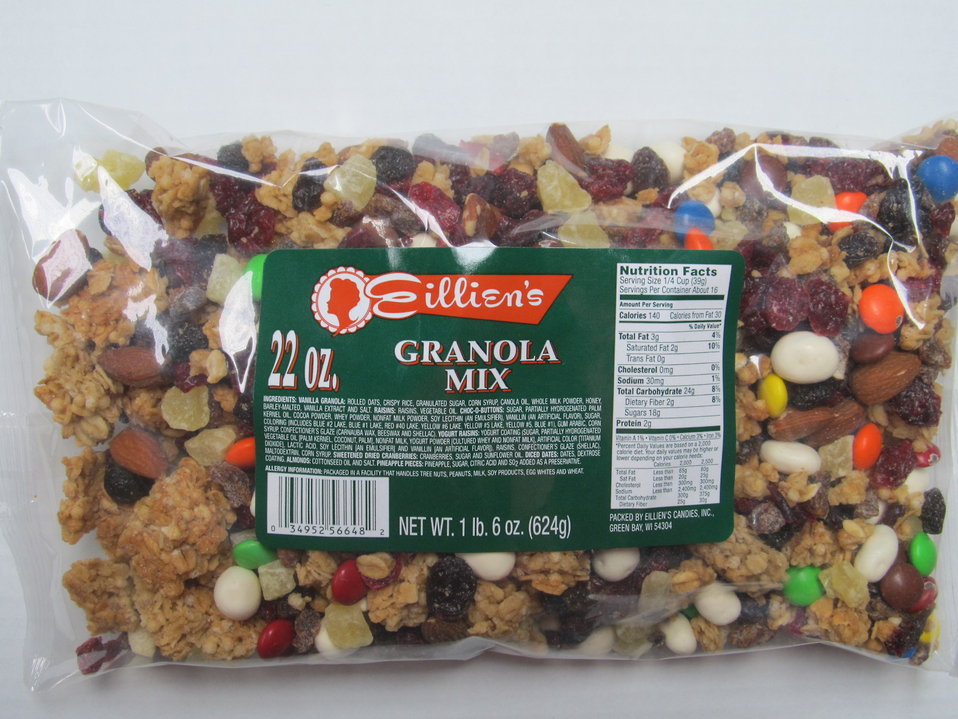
RECALLED - Yogurt Raisins and Granola Mix

December 22, 2011 - Eillien's Candies, Inc. Issues a Voluntary Recall of Select Candy Items Due to Possible Health Risk.